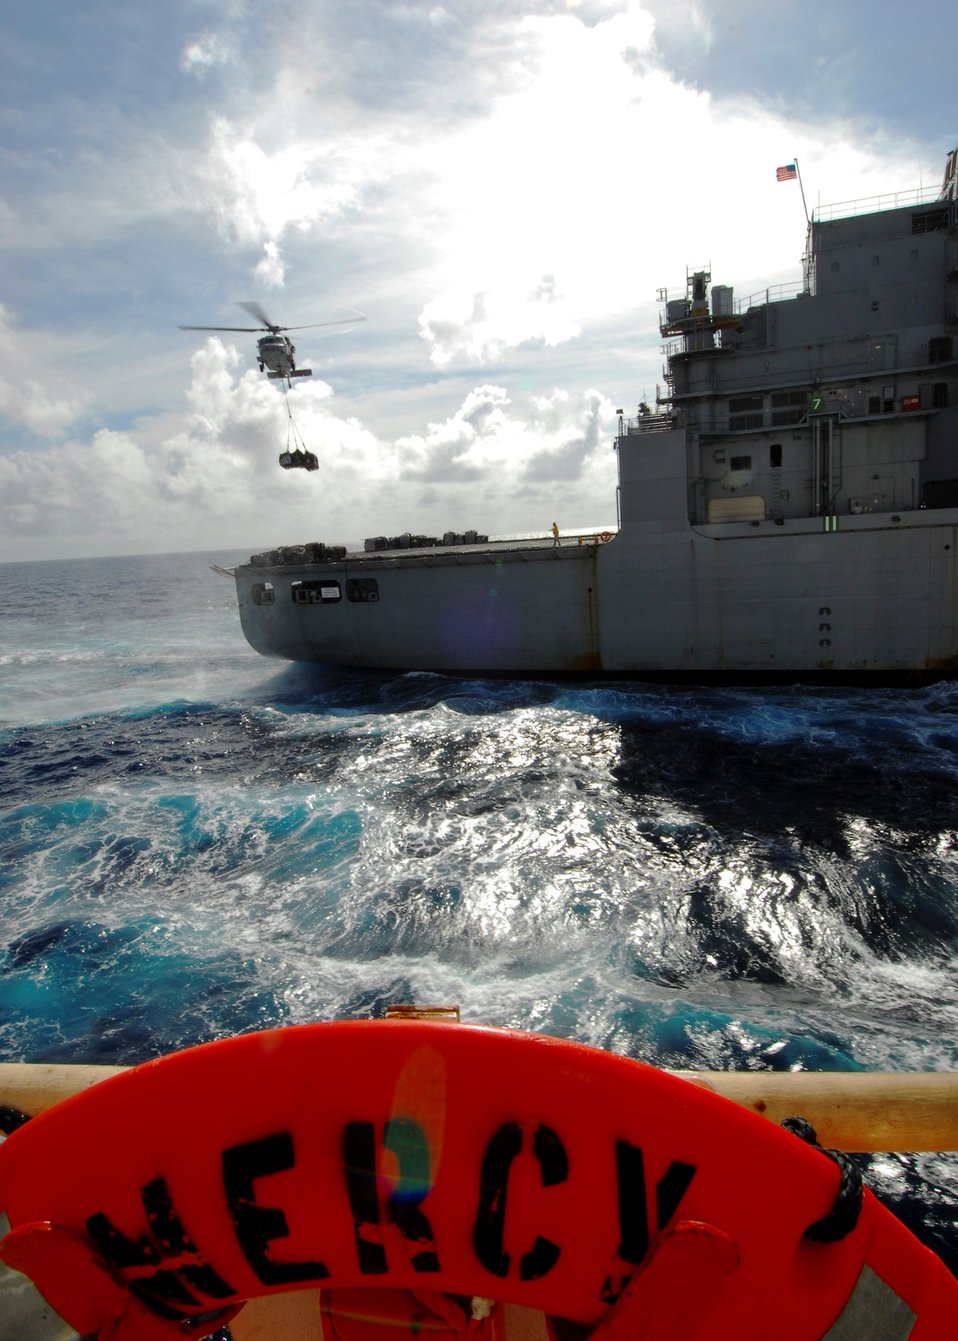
An MH-60S Knighthawk Helicopter Conducts a Vertical Replenishment (VERTREP) With Dry Cargo/ Ammunition Ship USNS Richard E. Byrd (T-AKE 4)

An MH-60S Knighthawk helicopter from Helicopter Sea Combat Squadron 23 “Wild Cards”, embarked aboard the Military Sealift Command hospital ship USNS Mercy (T-AH 19), conducts a vertical replenishment (VERTREP) with Dry Cargo/ Ammunition Ship USNS Richard E. Byrd (T-AKE 4) on July 11, 2010. Mercy is conducting Pacific Partnership 2010, the fifth in a series of annual U.S. Pacific Fleet humanitarian and civic assistance endeavors to strengthen regional partnerships.